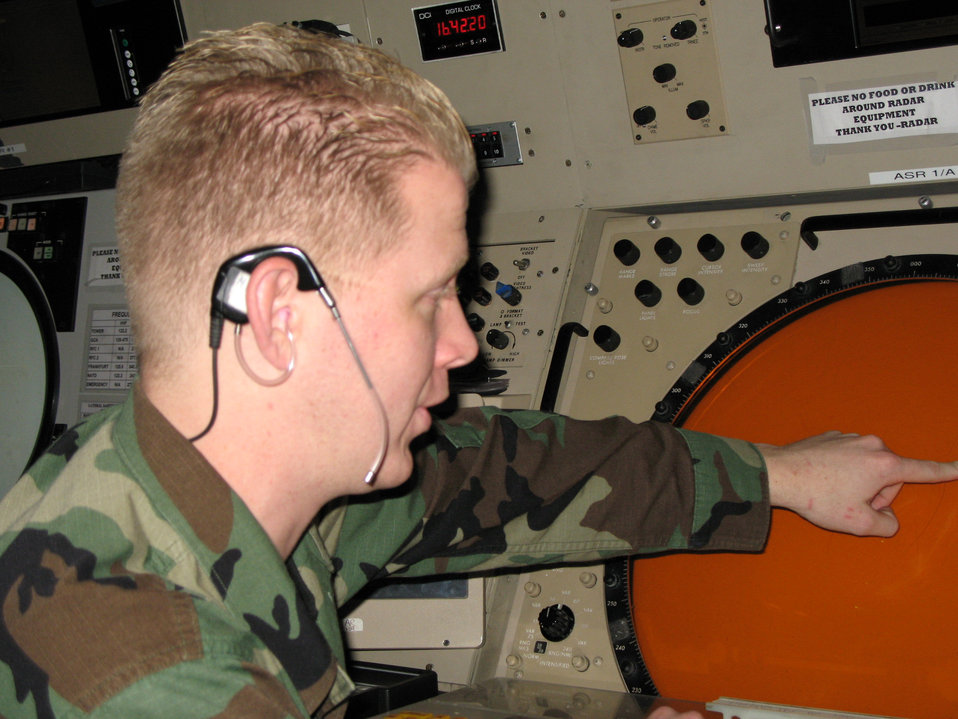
Serving through the season: Senior Airman Matt Hodges

Senior Airman Matt Hodges is assigned to the 52nd Operation Support Squadron at Spanghdahlem Air Base, Germany. He volunteered to serve through the season on Christmas Day so that his fellow air traffic controllers can enjoy some holiday fun with their families.